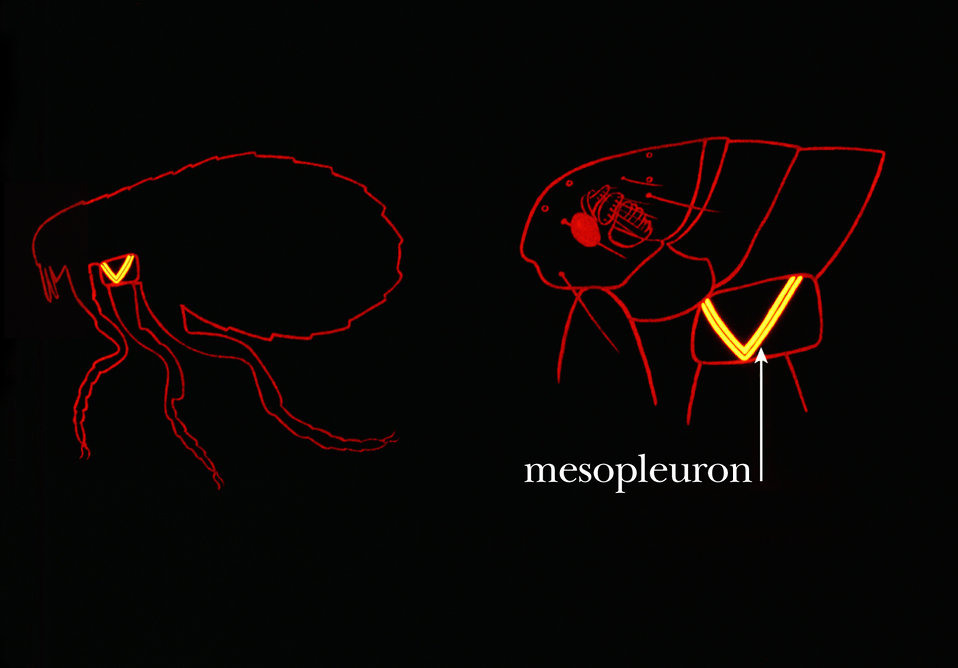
This drawing shows some of the morphologic characteristics on the thoracic region of a flea used when identifying these insects.